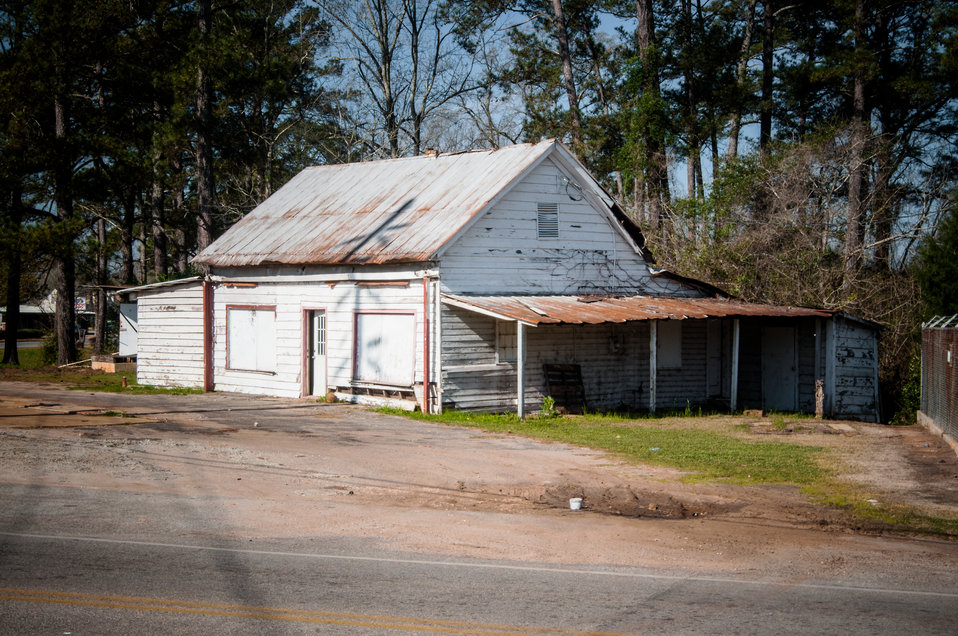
A vacant building sits near the side of the road in Forest City, AR on Mar. 7, 2013. The U.S. Department of Agriculture (USDA0 in partnership with Heifer International (an International organization whose mission is to work with communities to end hunger and poverty and care for the Earth) and various for-profit and non-profit organizations have put in motion the Seeds of Change Implementation Plan to use sustainable agriculture to build food systems in the Arkansas Delta. The program has evolved into the Arkansas Delta Seeds of Change (ADSOC) Initiative. The East Arkansas Enterprise Community, Inc. in Forrest City, AR is one of 42 community-based organizations located in high poverty areas in the United States to benefit from the ADSOC Initiative.